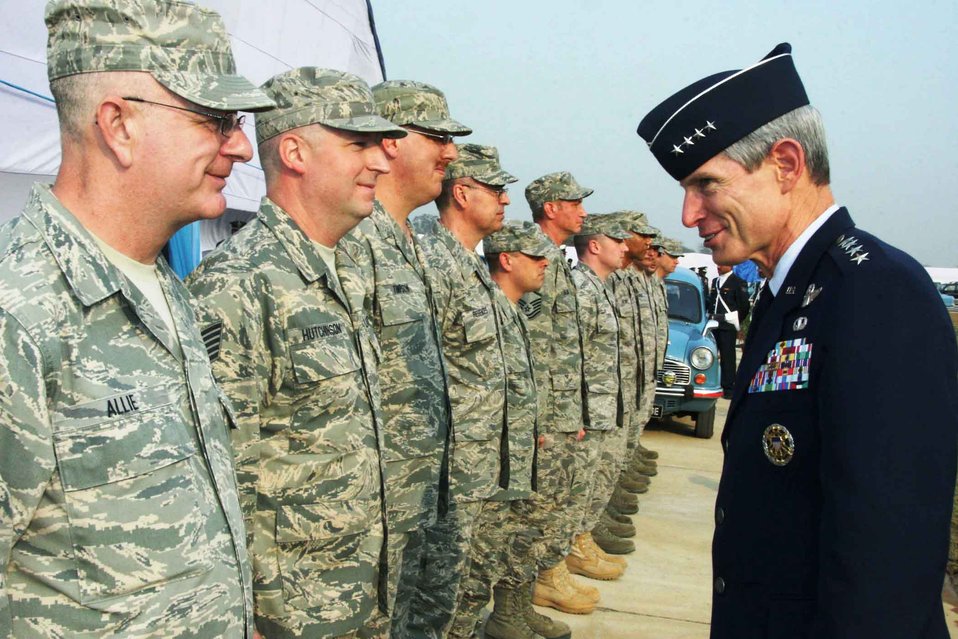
CSAF helps Indian Air Force welcome C-130J

Air Force Chief of Staff Gen. Norton Schwartz meets with Airmen during the C-130J Super Hercules induction ceremony at Hindon Air Force Station Feb. 5, 2011, near New Delhi, India. The Indian Air Force inducted the first of six C-130Js aircraft into its mobility fleet.